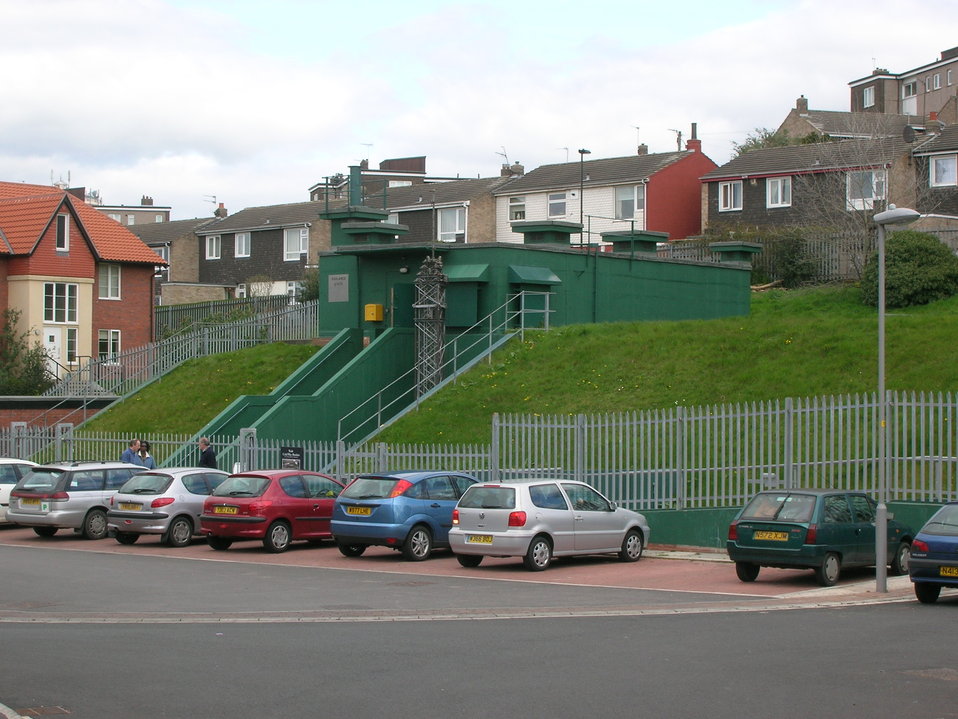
I am the author